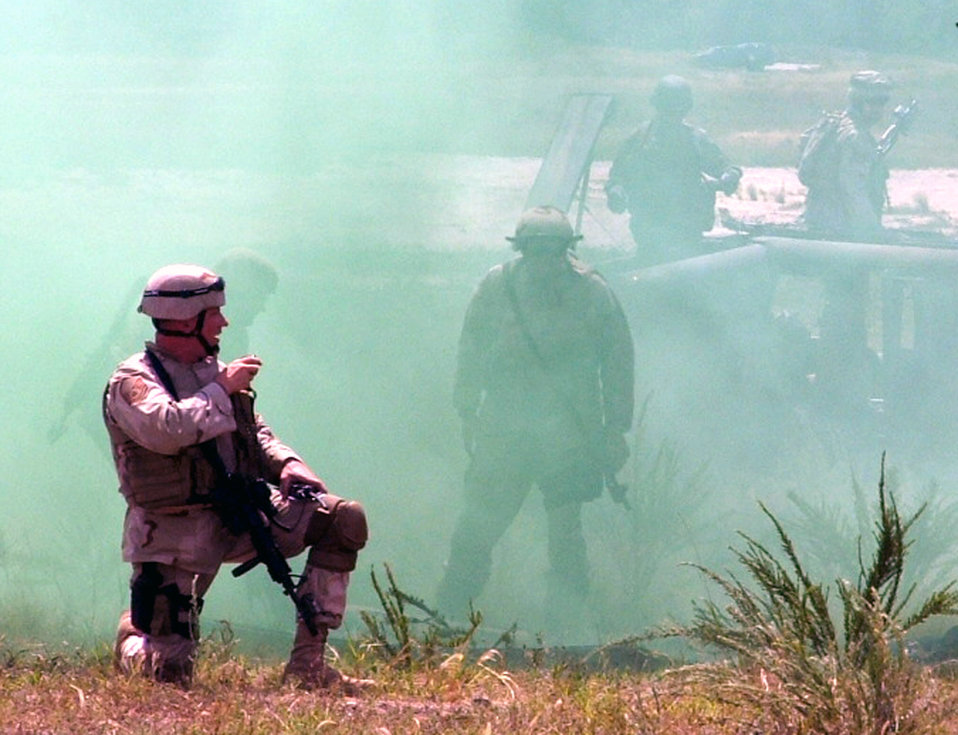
Phoenix Warrior prepares security forces

A student in the Phoenix Warrior 06-1 course calls for aid while his fellow security forces Airmen respond to an exercise medical emergency at Fort Dix, N.J., on Aug. 8. More than 90 Air Force security forces participated in the course to prepare for deployments. The course is taught by the Air Mobility Warfare Center's 421st Combat Training Squadron.